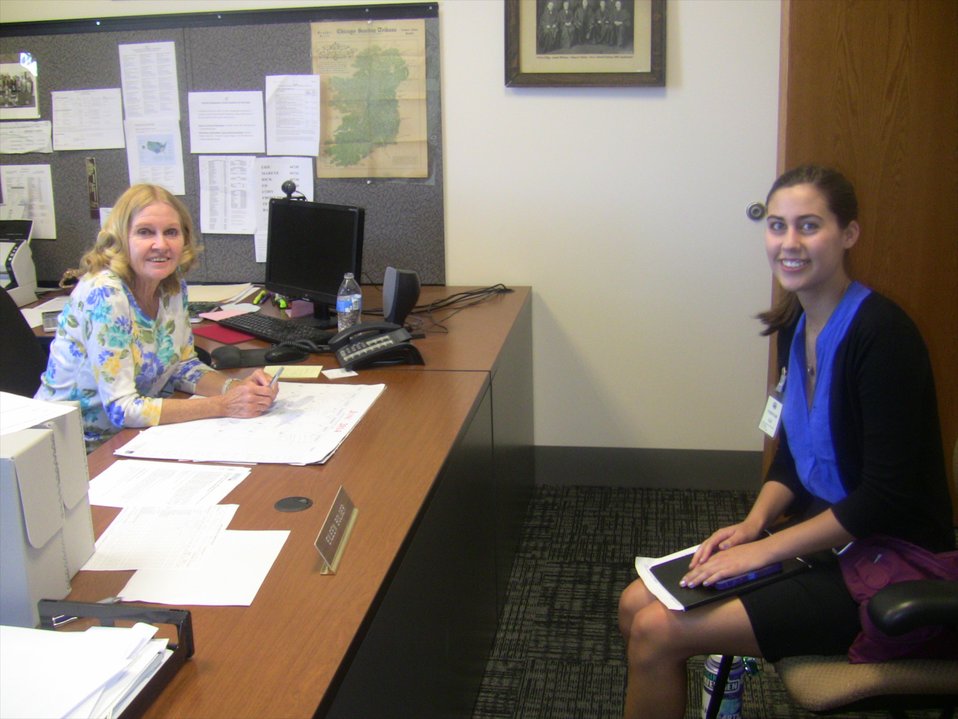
New Intern Laura Romer meeting with Eileen Bolger; Location: National Archives at Denver, Broomfield, CO